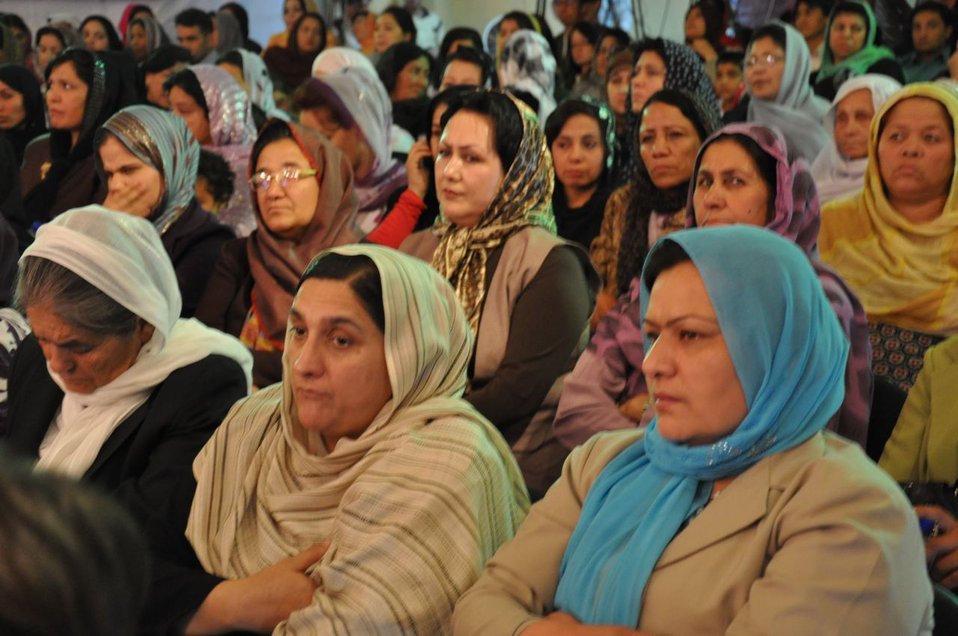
Mother's Day in Afghanistan